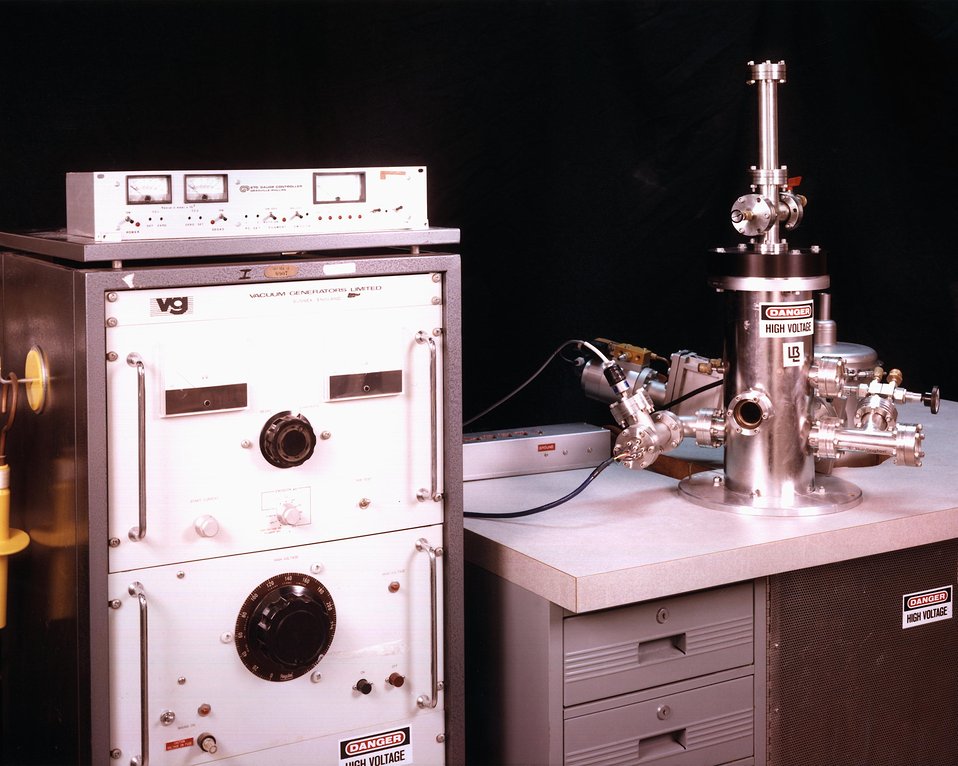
THE SMALL ANGLE SCATTERING SYSTEM CAN BE USED TO MEASURE PARTICLES BETWEEN .01 AND 1.0 MICRONS (MILLIONTHS OF A METER) IN SIZE.

WHEN A BEAM OF ELECTROMAGNETIC RADIATION STRIKES AN OBJECT, ITS LIGHT WAVES ARE SCATTERED, FORMING INTERFERENCE PATTERNS WITH UNSCATTERED WAVES OF THE SAME LIGHT THAT CAN BE MATHEMATICALLY INTERPRETED. AT WAVELENGTHS BETWEEN 10 AND 50 ANGSTROMS, LOW ENERGY OR 'SOFT' X-RAYS ARE THE PERFECT SIZE FOR MEASURING MICRON AND SUBMICRON OBJECTS. USING THIS TECHNIQUE, LBL RESEARCHERS WILL BE ABLE TO LOOK AT BIOLOGICAL MATERIALS WITHOUT REMOVING THEM FROM THEIR NATURAL AQUEOUS ENVIRONMENTS, OR CAUSING EXTENSIVE RADIATION DAMAGE.